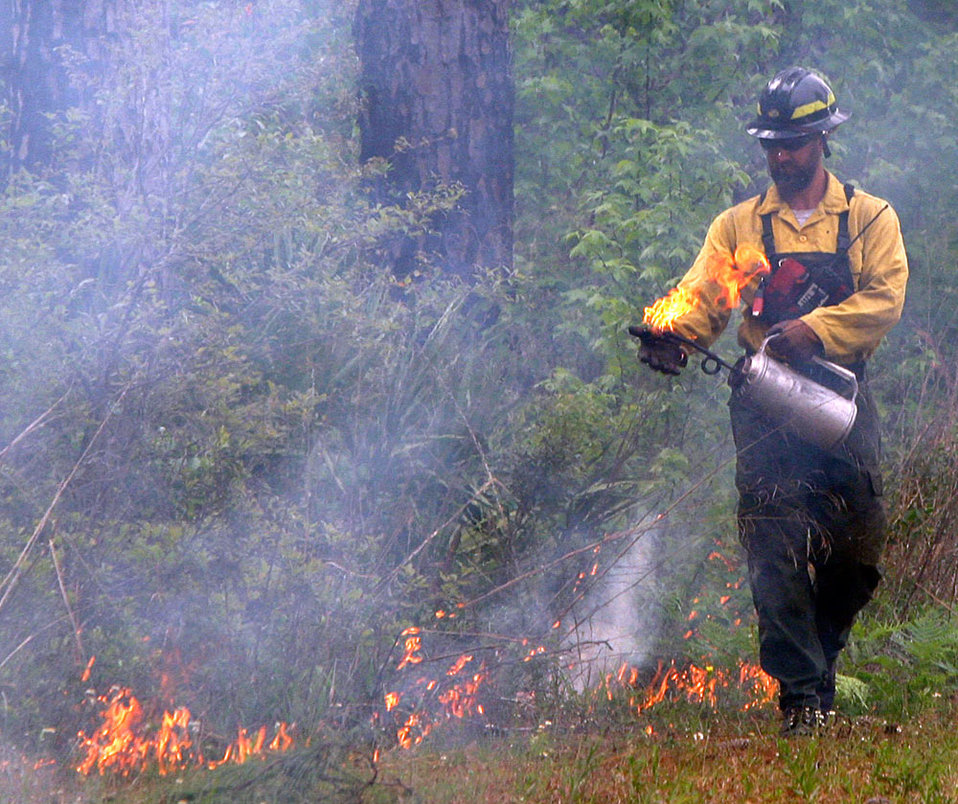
George Pelt - Southeast Region

After serving in the Marines, George Pelt is the Engineering Equipment Operator (Fire) at Lower Suwannee National Wildlife Refuge in Florida.